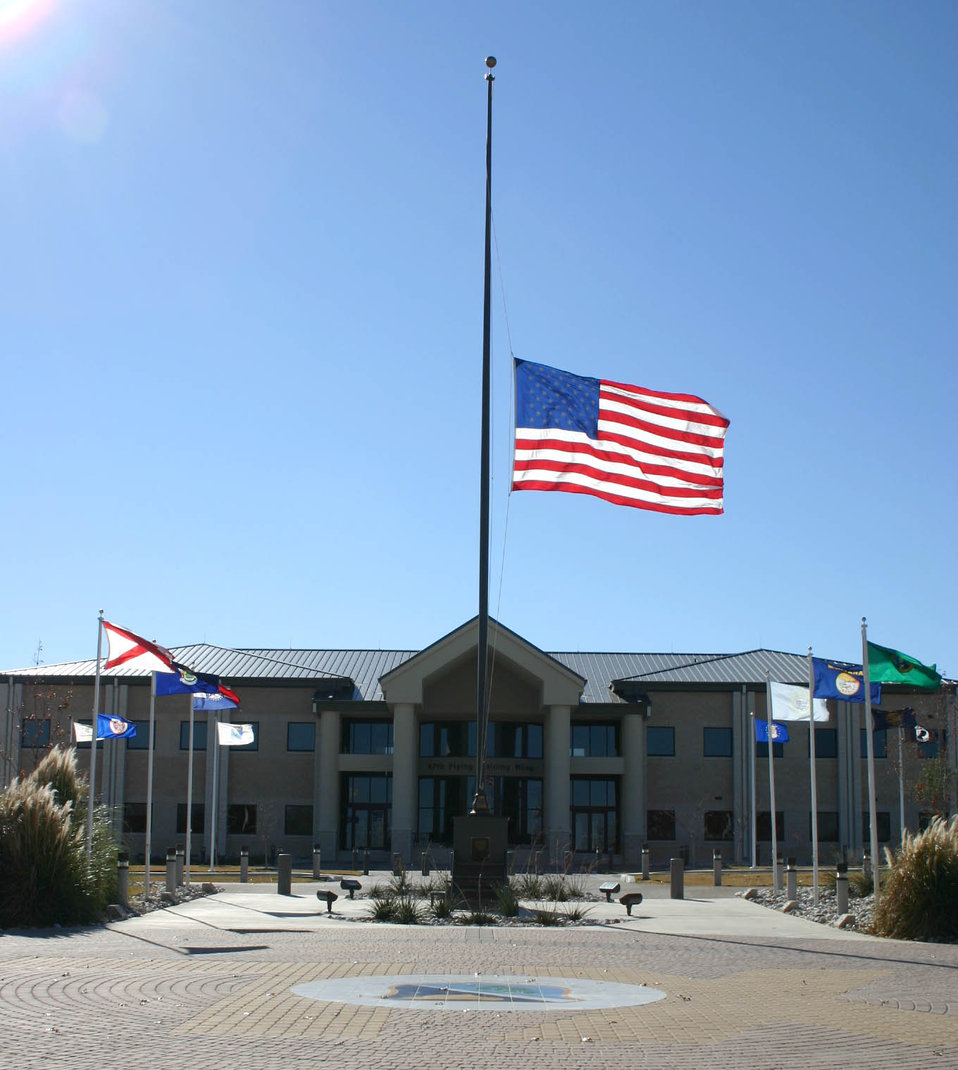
Rumsfeld remembers Ford as patriot

The flag outside the 47th Flying Training Wing headquarters at Laughlin Air Force Base, Texas, flies at half-staff in remembrance of Gerald R. Ford, the 38th president of the United States.